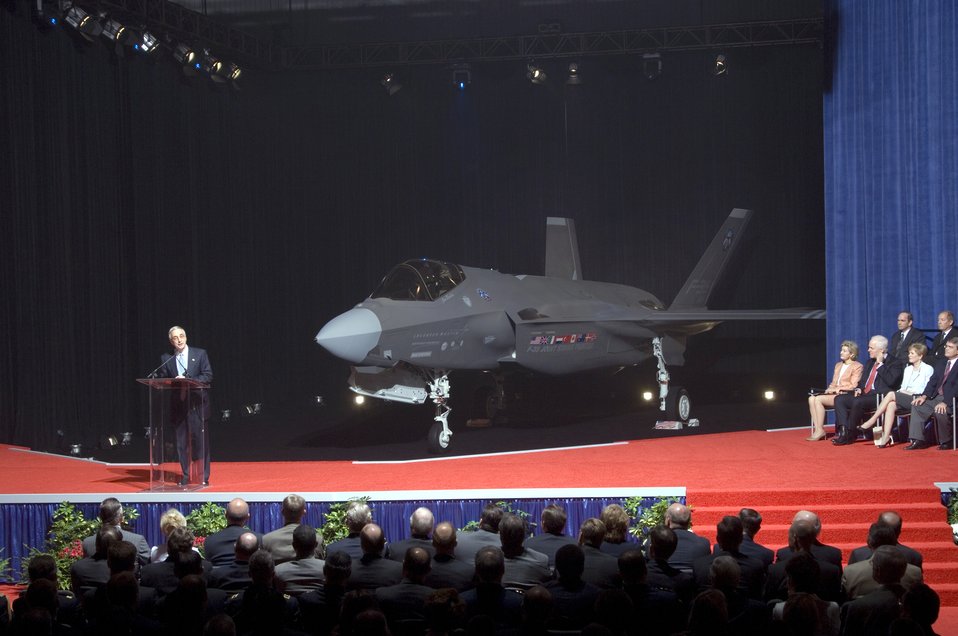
Lightning II makes its debut

Deputy Secretary of Defense Gordon England presents the Lockheed Martin F-35 Lightning II during the inauguration ceremony at the Lockheed Martin plant in Fort Worth, Texas, on July 7. The Lightning II is a 5th-generation, supersonic stealth fighter designed to replace a wide range of existing aircraft, including the AV-8B Harrier, A-10 Thunderbolt II, F-16 Fighting Falcon, F/A-18 Hornet and Royal Air Force Harrier GR-7 and Sea Harriers.